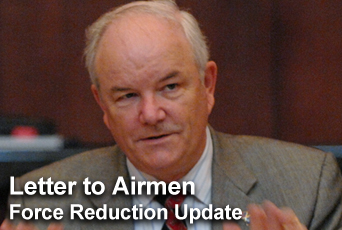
Secretary Wynne

In the latest Letter to Airmen, Secretary of the Air Force Michael W. Wynne discusses force reduction.